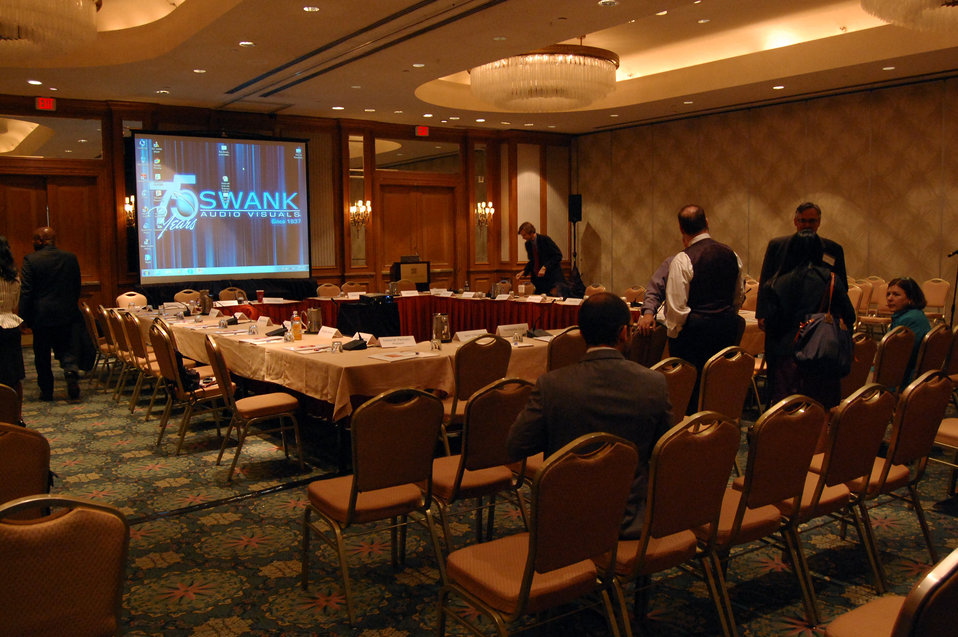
PACHA conf003